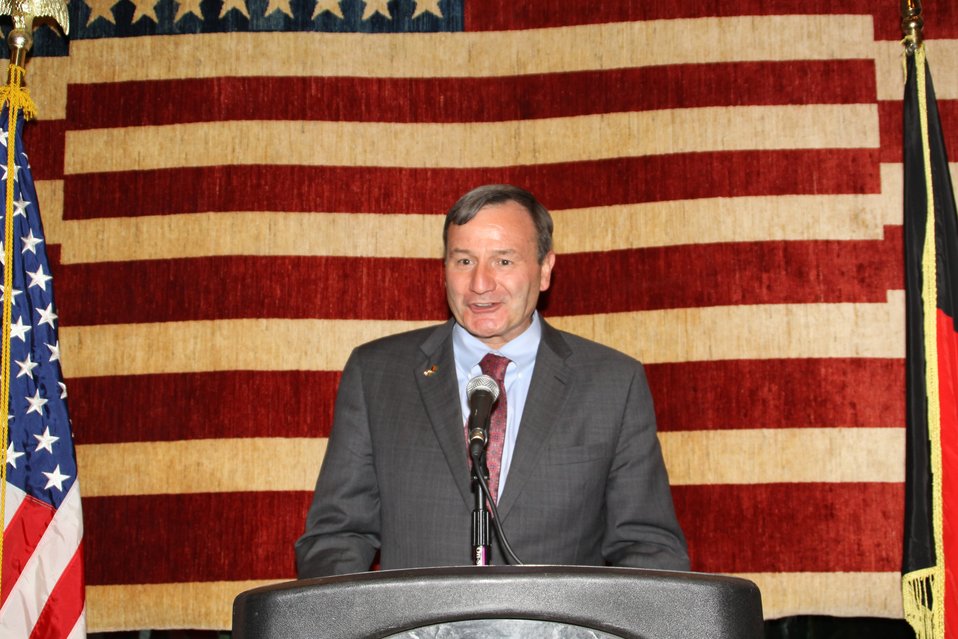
US Embassy Town Hall July 21, 2010